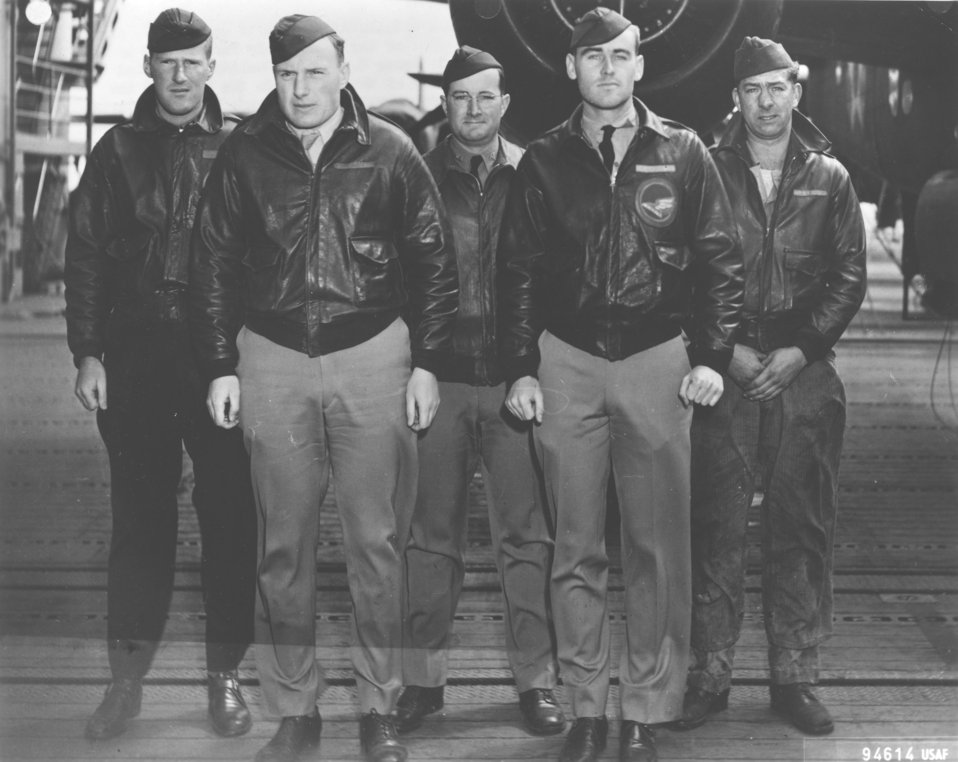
Doolittle Tokyo Raiders, Crew No. 15

Crew No. 15 (Plane #40-2267, target Nagoya): 89th Reconnaissance Squadron, back row: Lt. Donald G. Smith, pilot; and Lt. Griffith P. Williams, copilot; back row: Lt. Howard A. Sessler, navigator/bombardier; Lt. Thomas R. White, flight engineer; and Sgt. Edward J. Saylor, gunner.